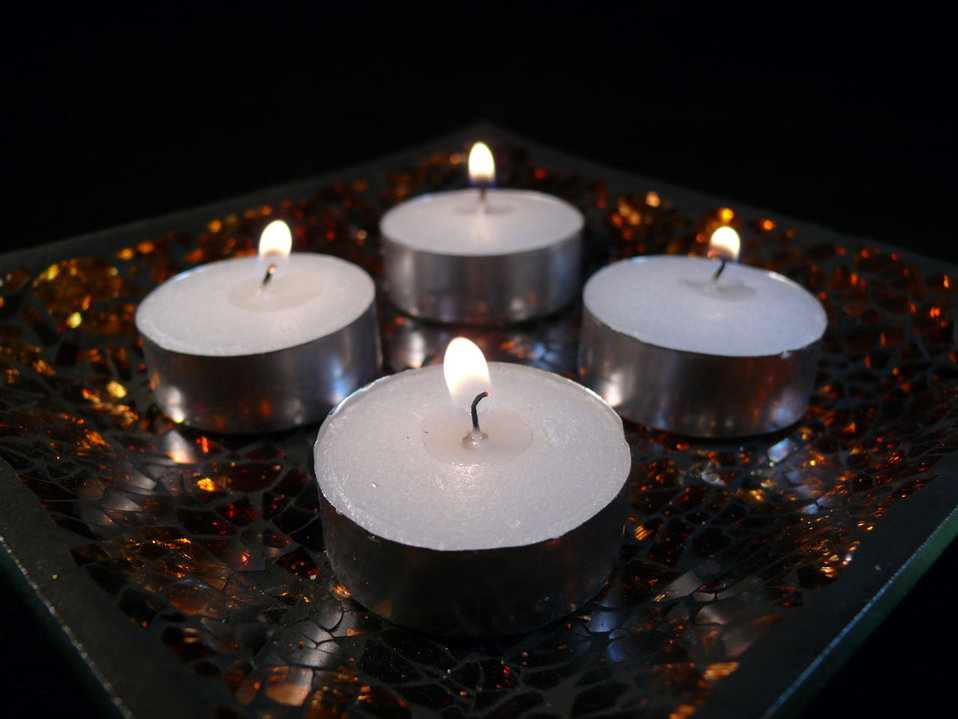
Candles on plate.